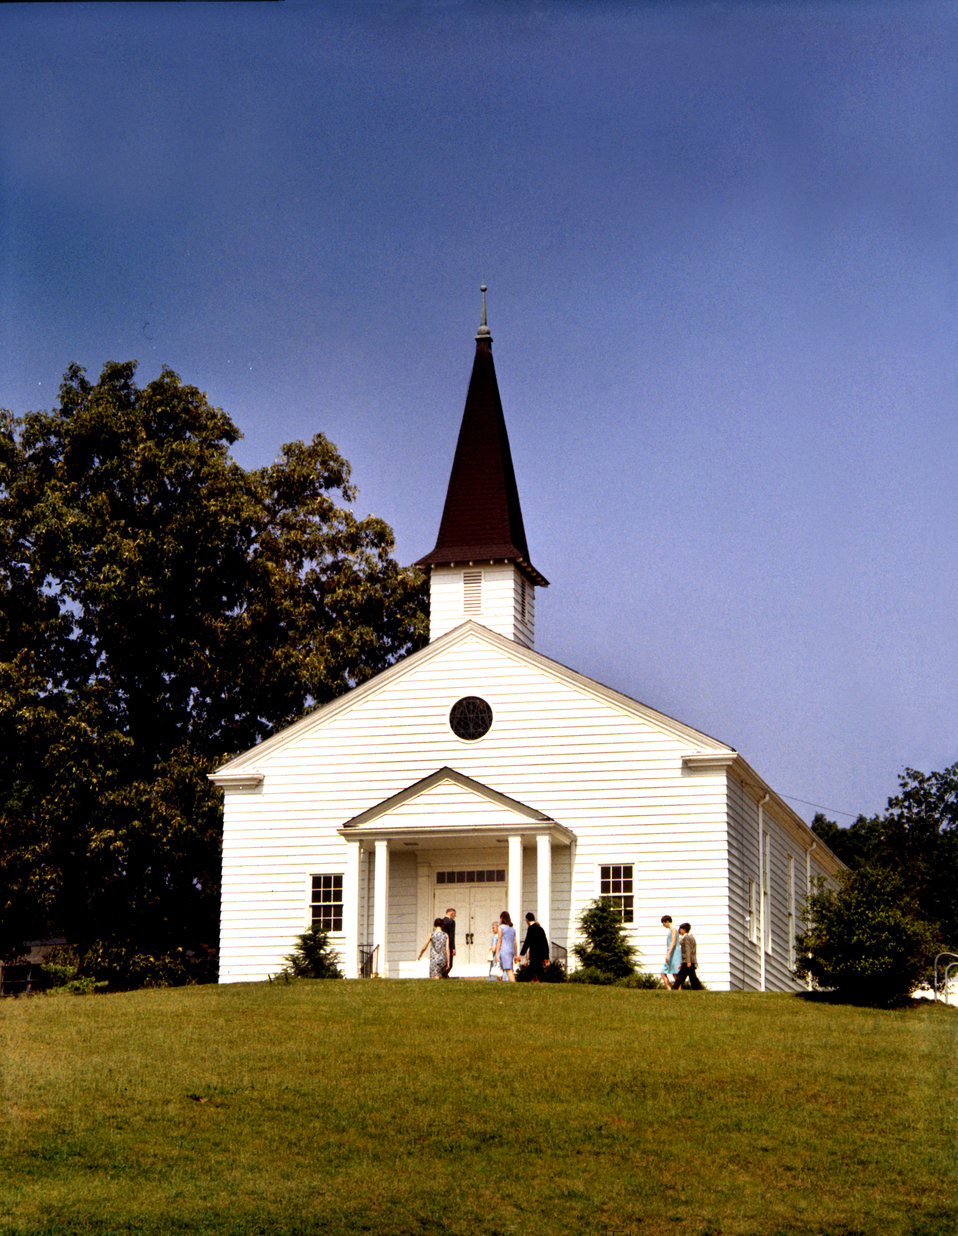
Chapel On The Hill Oak Ridge

DOE photo by Ed Westcott 1960s Oak Ridge Tennessee